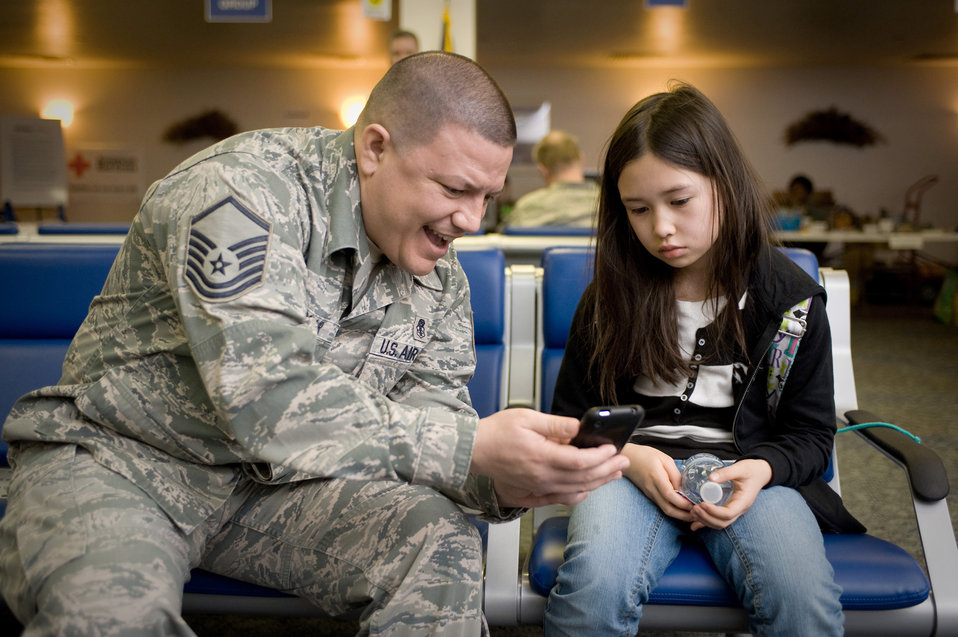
Travis AFB volunteers aid Operation Pacific Passage

Master Sgt. Brian Leclair tries to cheer up Ariana Payne March 28, 2011, at Travis Air Force Base, Calif. Payne and her mother arrived here following the March 11 natural disasters in Japan. In support of Operation Pacific Passage, Travis AFB members assisted more than 2,600 military dependents as they voluntarily relocated to the U.S. Leclair is assigned to the 60th Air Mobility Wing's Inspector General's Office.